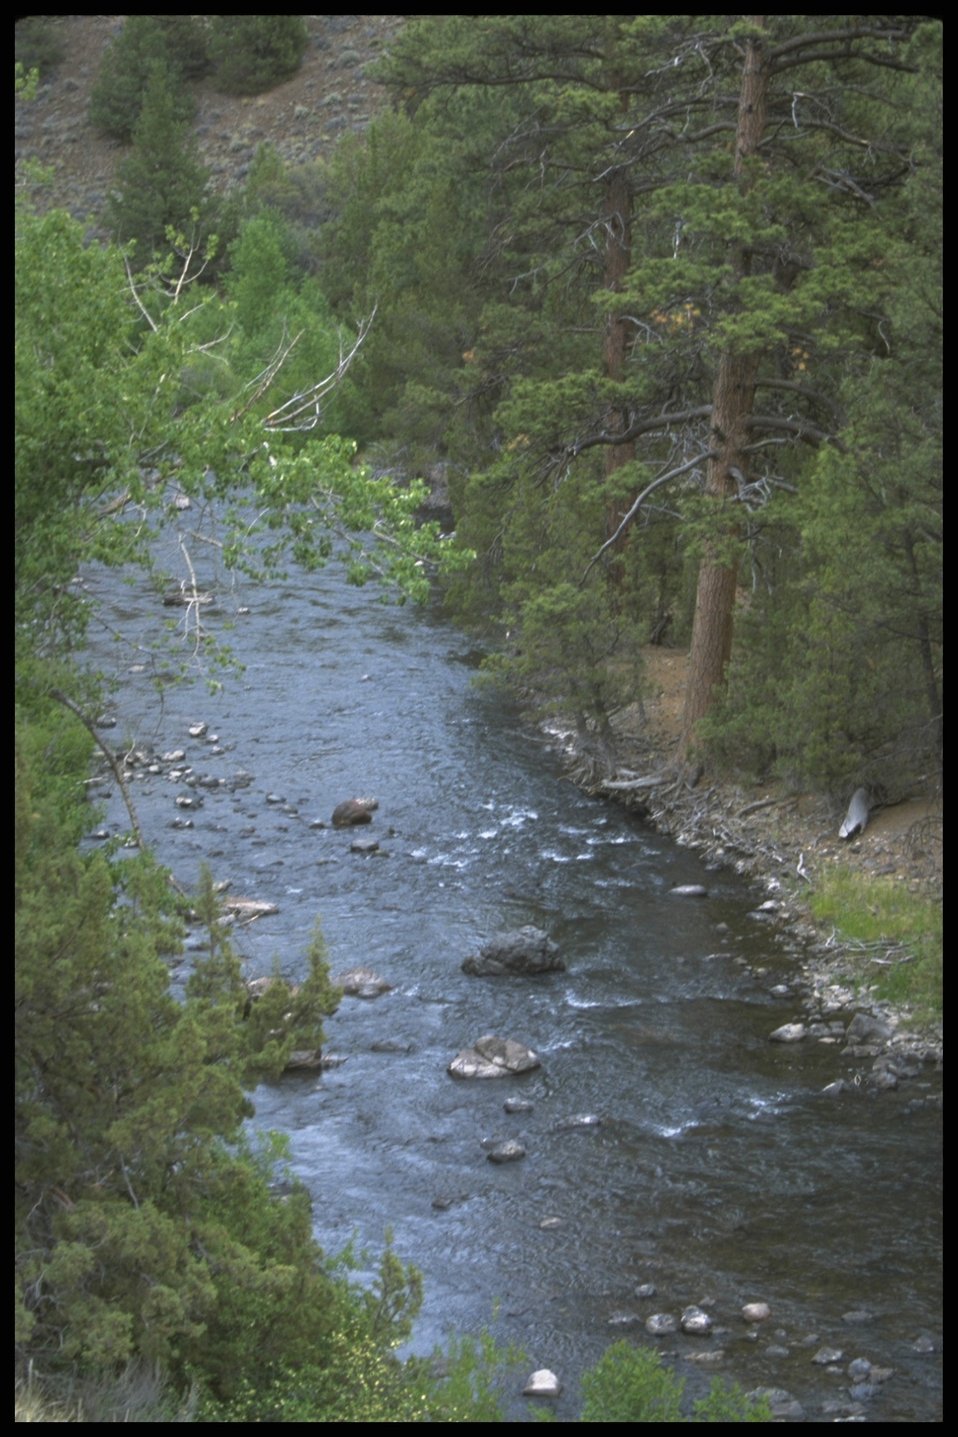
Chewaucan River, Lakeview District.